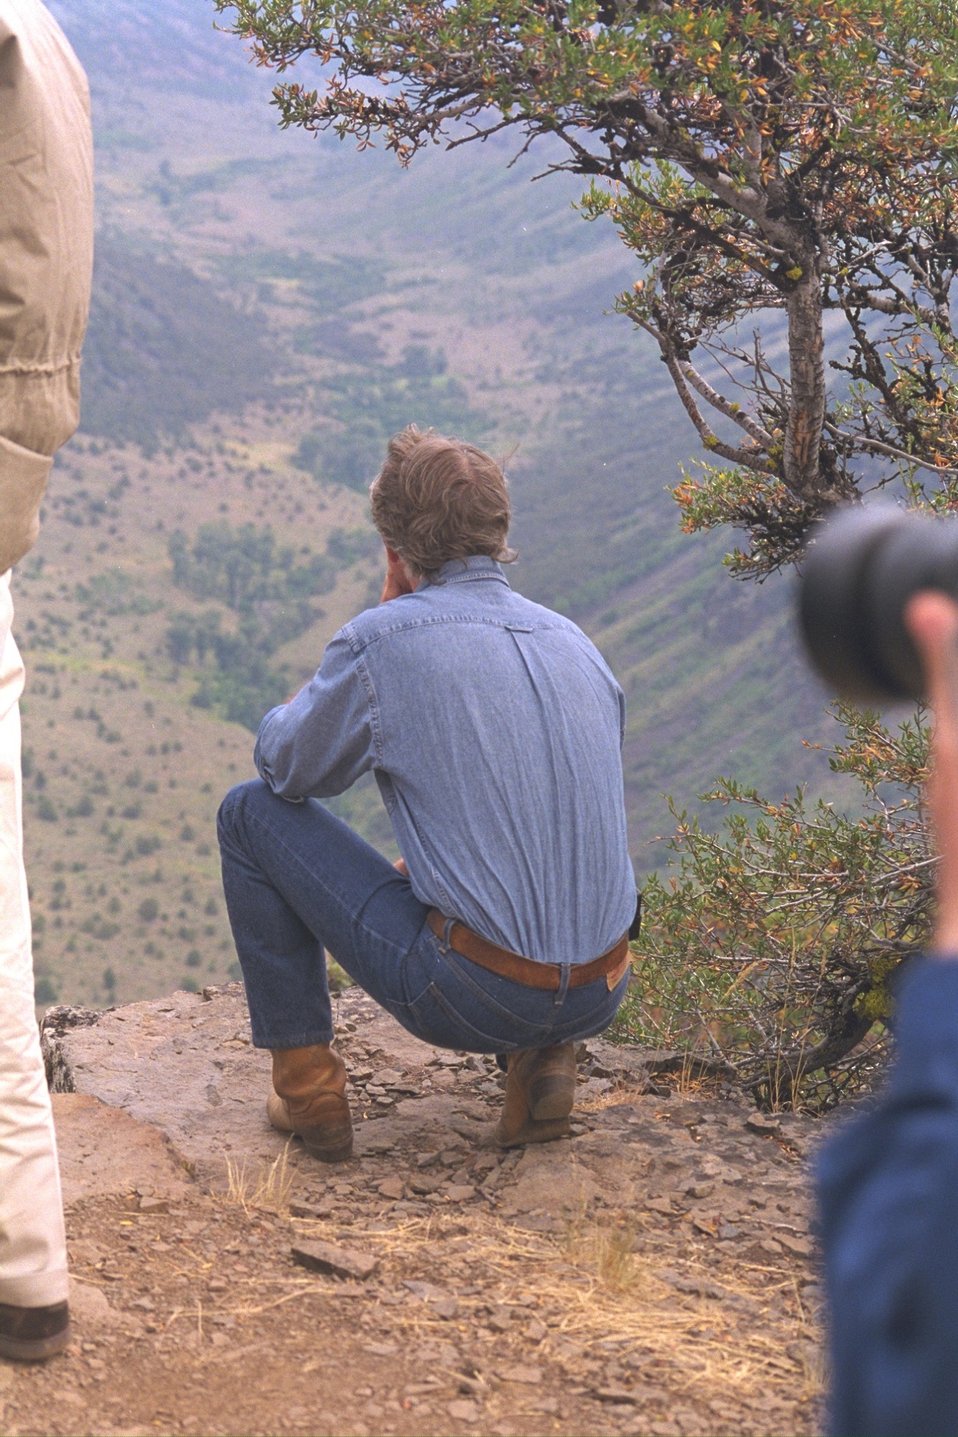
Governor Kitzhaber at Big Indian Gorge on Steens Mountain.